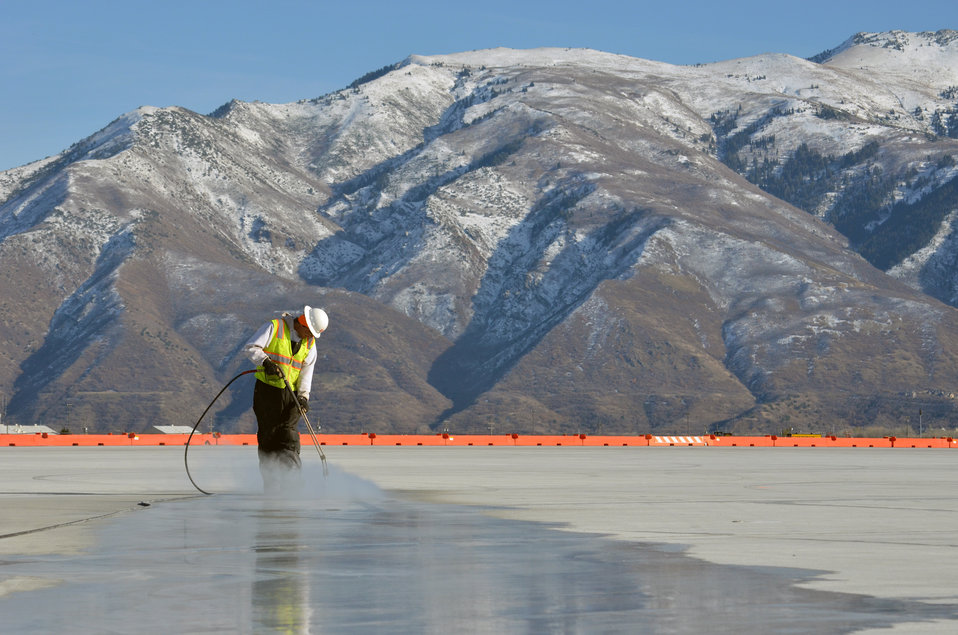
Taxiway apron nears completion at Hill Air Force Base

A contractor cleans a concrete apron in preparation for painting at Hill Air Force Base, Utah, Nov. 16, 2011. The U.S. Army Corps of Engineers Sacramento District is overseeing construction of the new apron, which will serve as a pad for arming and disarming aircraft. The $4.48 million project is expected to be completed in mid-January 2012.